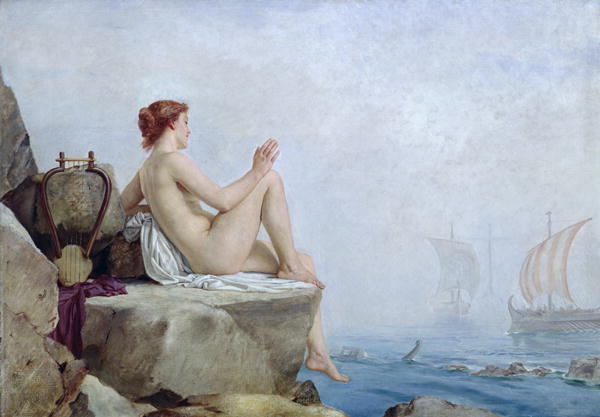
The Siren, oil on canvas, Leeds Art Gallery